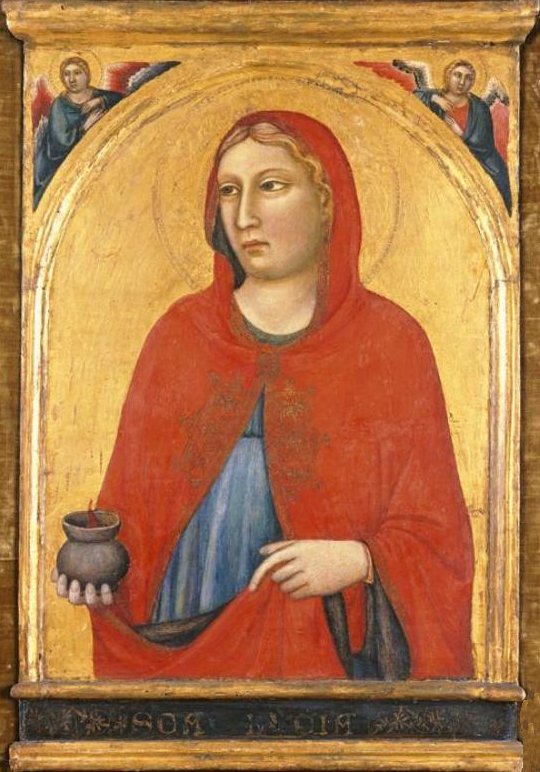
'St. Lucy', painting by Jacopo del Casentino and assistant, c. 1330, El Paso Museum of Art